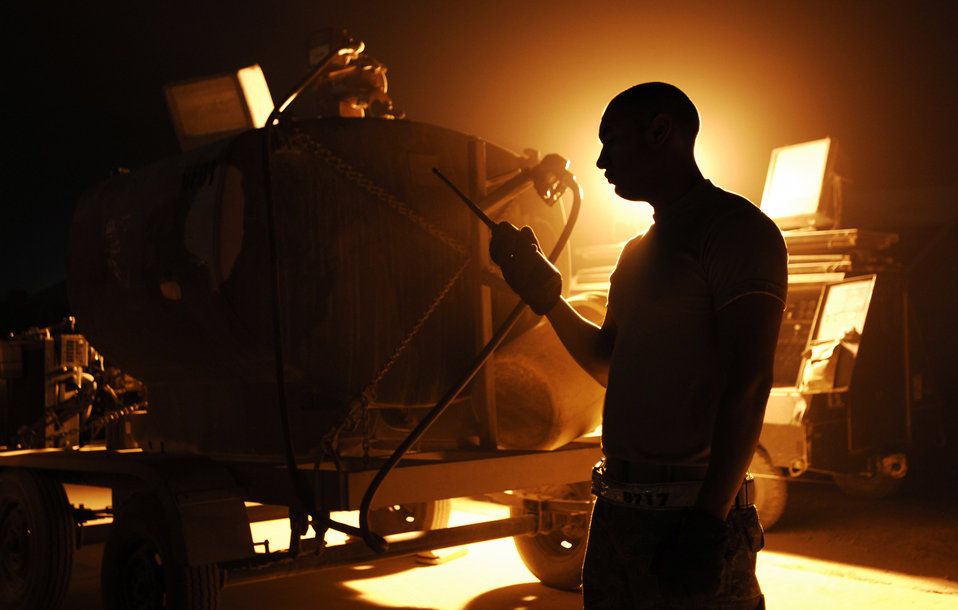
Lurking in the shadows

Senior Airman Fred Cruz communicates with his unit using a land mobile radio at Joint Base Balad, Iraq, Sept. 24. Airman Cruz is an aerospace ground equipment journeyman with the 332nd Expeditionary Maintenance Squadron and deployed from Shaw Air Force Base, S.C. His hometown is Sonora, Calif.